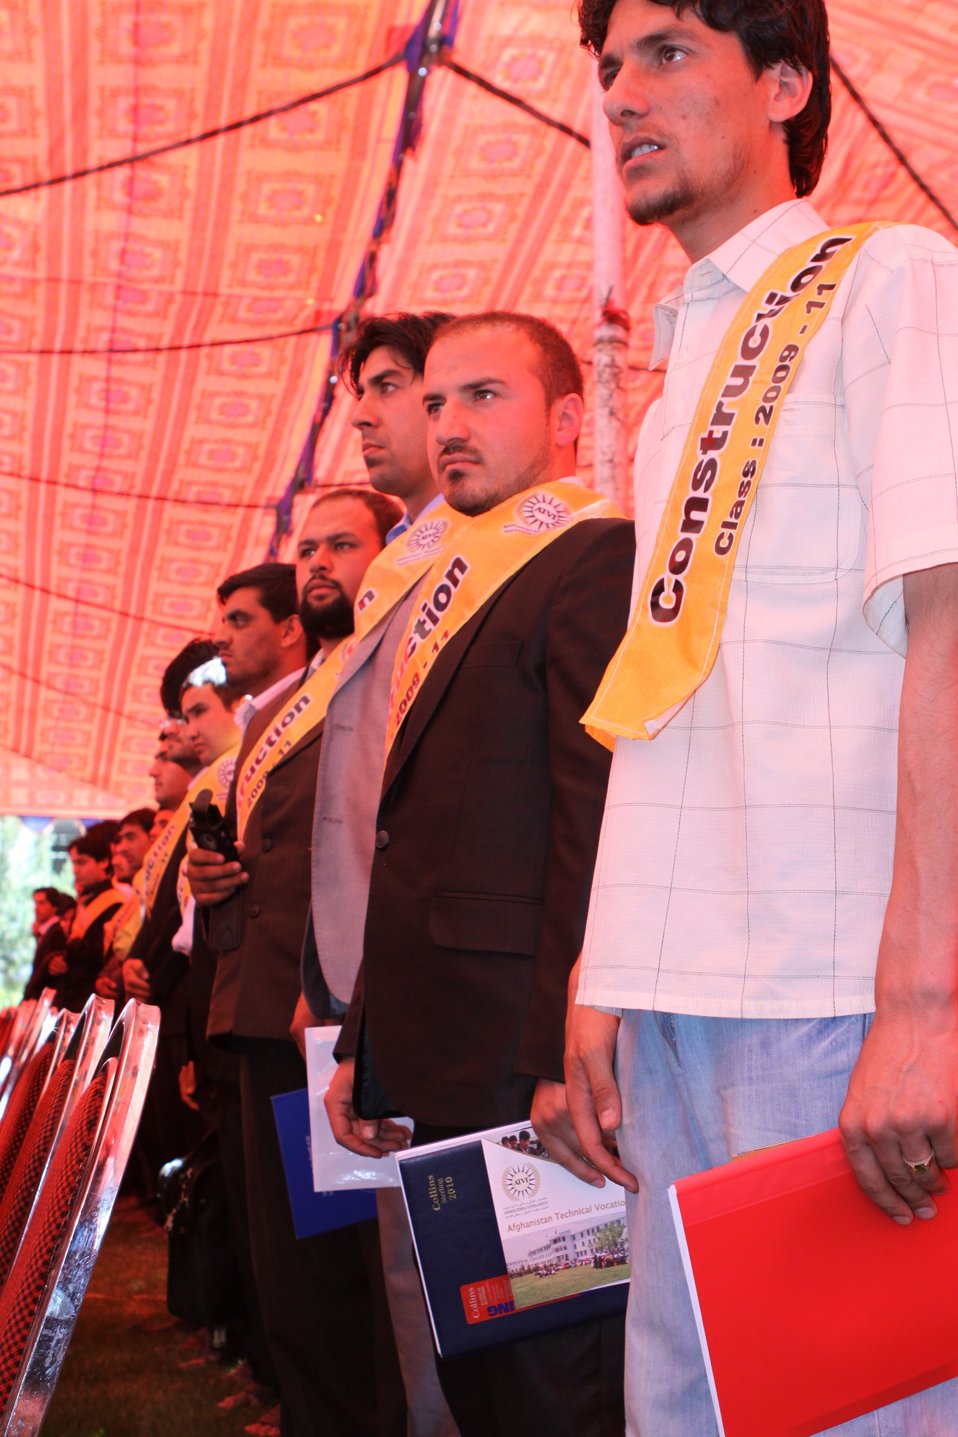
100522 ATVI Graduation 056